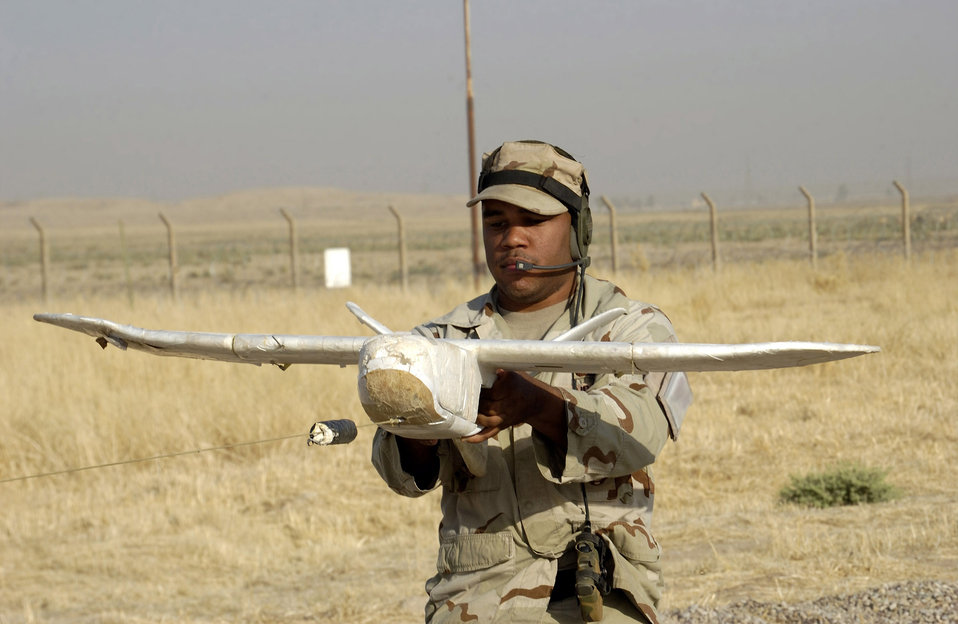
Launching surveillance

KIRKUK AIR BASE, Iraq -- Senior Airman Jonathan Hobbs pulls a Desert Hawk surveillance plane back in preparation to be launched with a bungee cord. The force protection airborne surveillance system flies missions recording still and video images for intelligence purposes. Airman Hobbs is an FPASS administrator and is deployed from Moody Air Force Base, Ga.